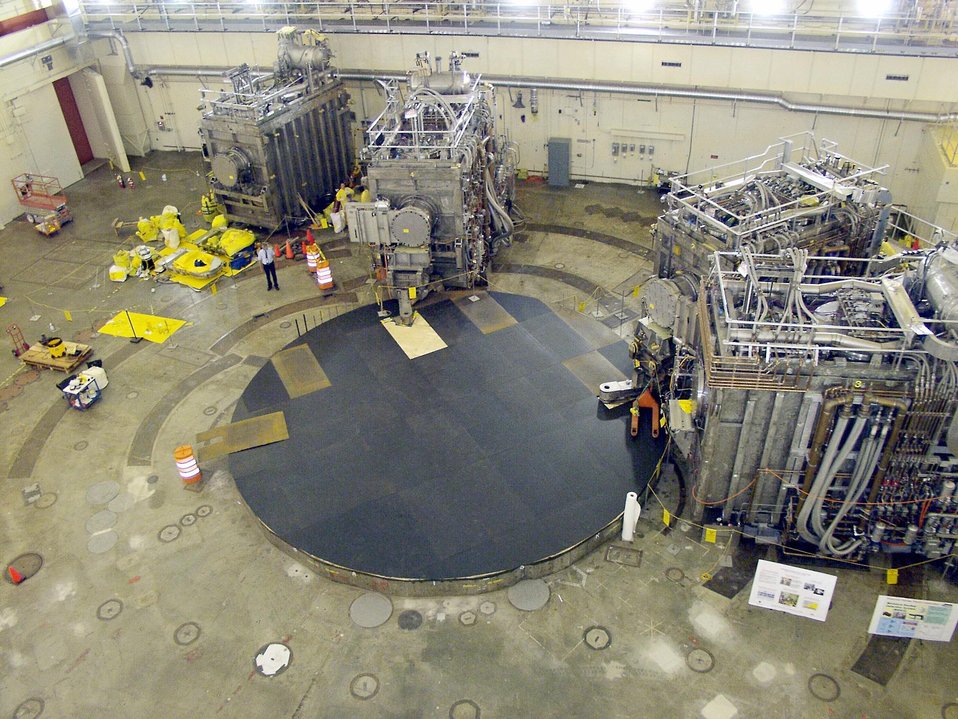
TOKAMAK FUSION TEST REACTOR CELL FOLLOWING REMOVAL OF THE EXPERIMENT.

THE DISASSEMBLY AND REMOVAL OF THE TOKAMAK FUSION TEST REACTOR WAS COMPLETED IN SEPTEMBER, 2002. TFTR'S FOUR NEUTRAL-BEAM INJECTOR, USED TO HEAT PLASMA TO THE TEMPERATURES REQUIRED FOR FUSION, REMAIN IN THE TEST CELL.